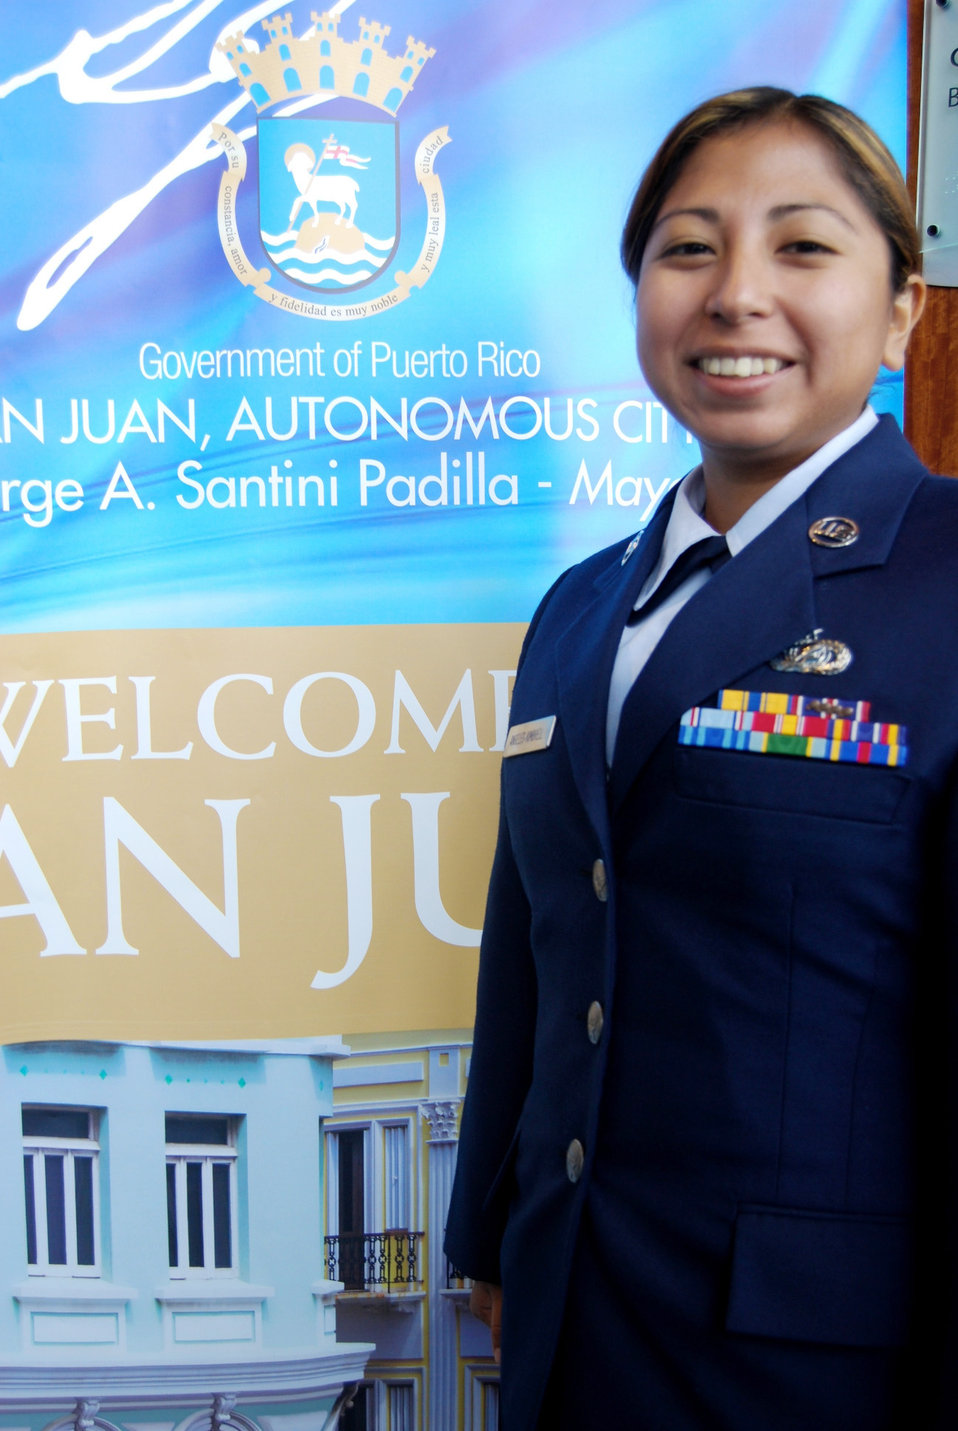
Reservists share personal success stories at LULAC

Tech. Sgt. Alyson Angeles-Kimbrell pauses for a smile at the League of United Latin American Citizens convention and exposition July 17 in San Juan, Puerto Rico. Sergeant Angeles-Kimbrell was one of dozens of Air Force reservists who spoke to local high school and college students to educate them about opportunities in the Air Force. Sergeant Angeles-Kimbrell is an information manager on full-time orders with the 349th Air Mobility Wing from Travis Air Reserve Base, Calif.